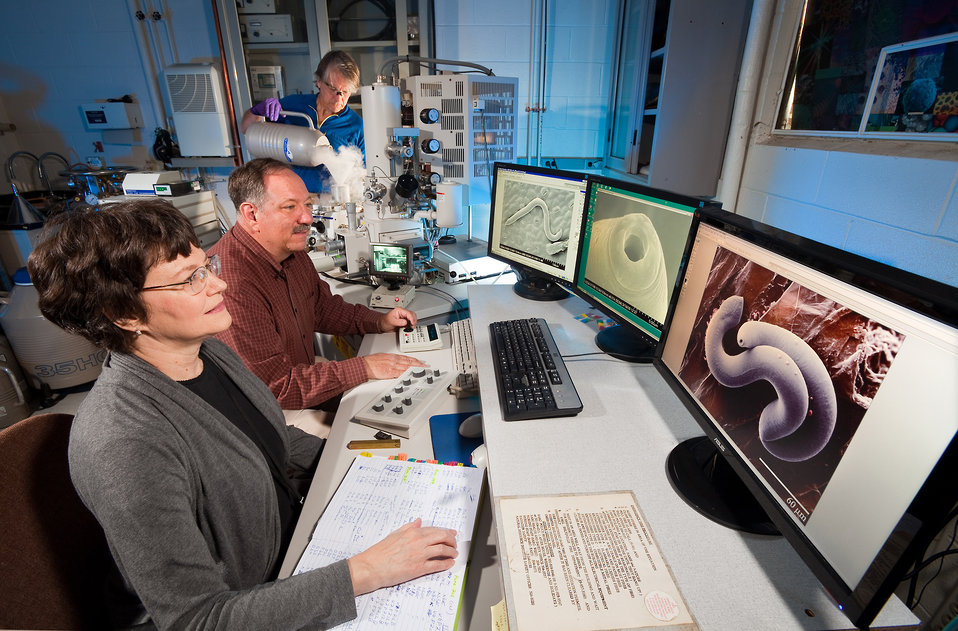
U.S. Department of Agriculture (USDA) Agricultural Research Service (ARS) nematologist/pathologist Lynn Cart and Electron and Confocal Microscopy Unit director Gary Bauchan use a low temperature scanning electron microscope (LT-SEM) to view anatomical structures needed to identify nematodes like the Parasitorhabditis nematode associated with pine trees and bark beetles at the Electron and Confocal Microscopy Unit in Beltsville MD on April 19, 2012. USDA ARS s support scientist Charlie Murphy adds liquid nitrogen in the background.